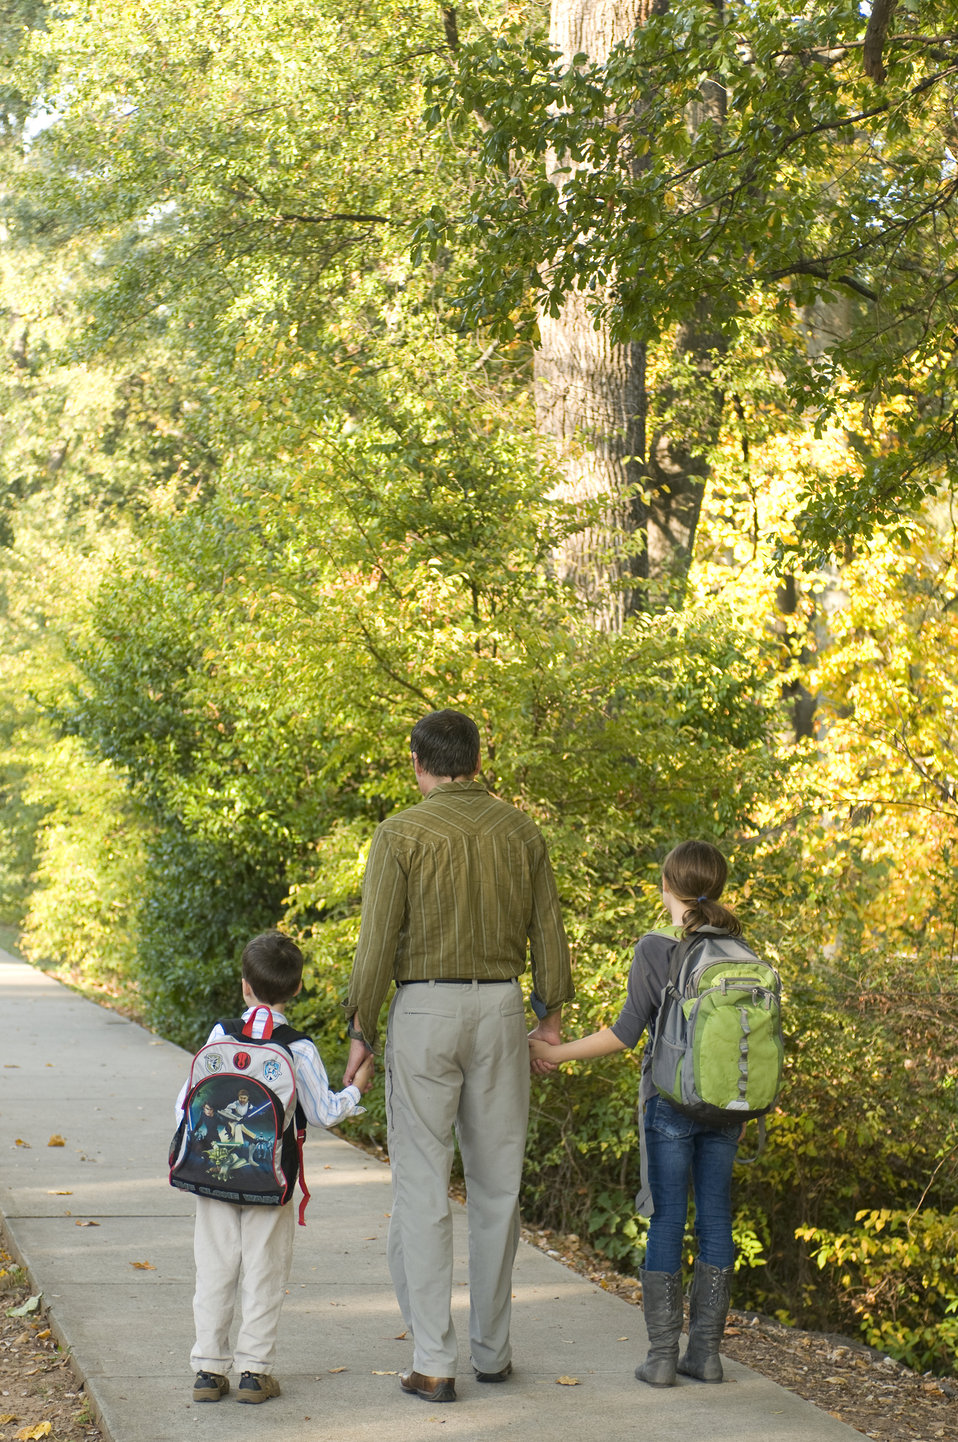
This image depicts a father and his two children walking hand-in-hand down a Georgian city street. His young son to his left, and daughter to his right, dad and kids were using the sidewalk as their path on this beautiful southern day. Note that they were dressed appropriately, their clothing protecting them from an extended time spent in the sunshine, and their backpacks filled with the requisite water, additional sunscreen, and some energy-filled snacks.